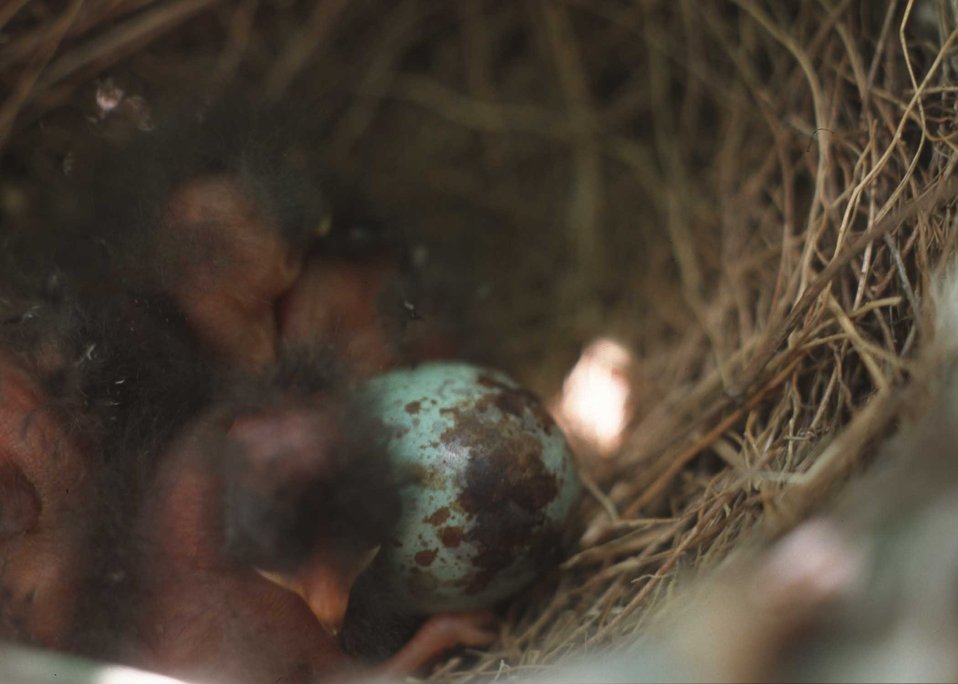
Warmer months bring newborn baby birds in Vienna, Georgia.